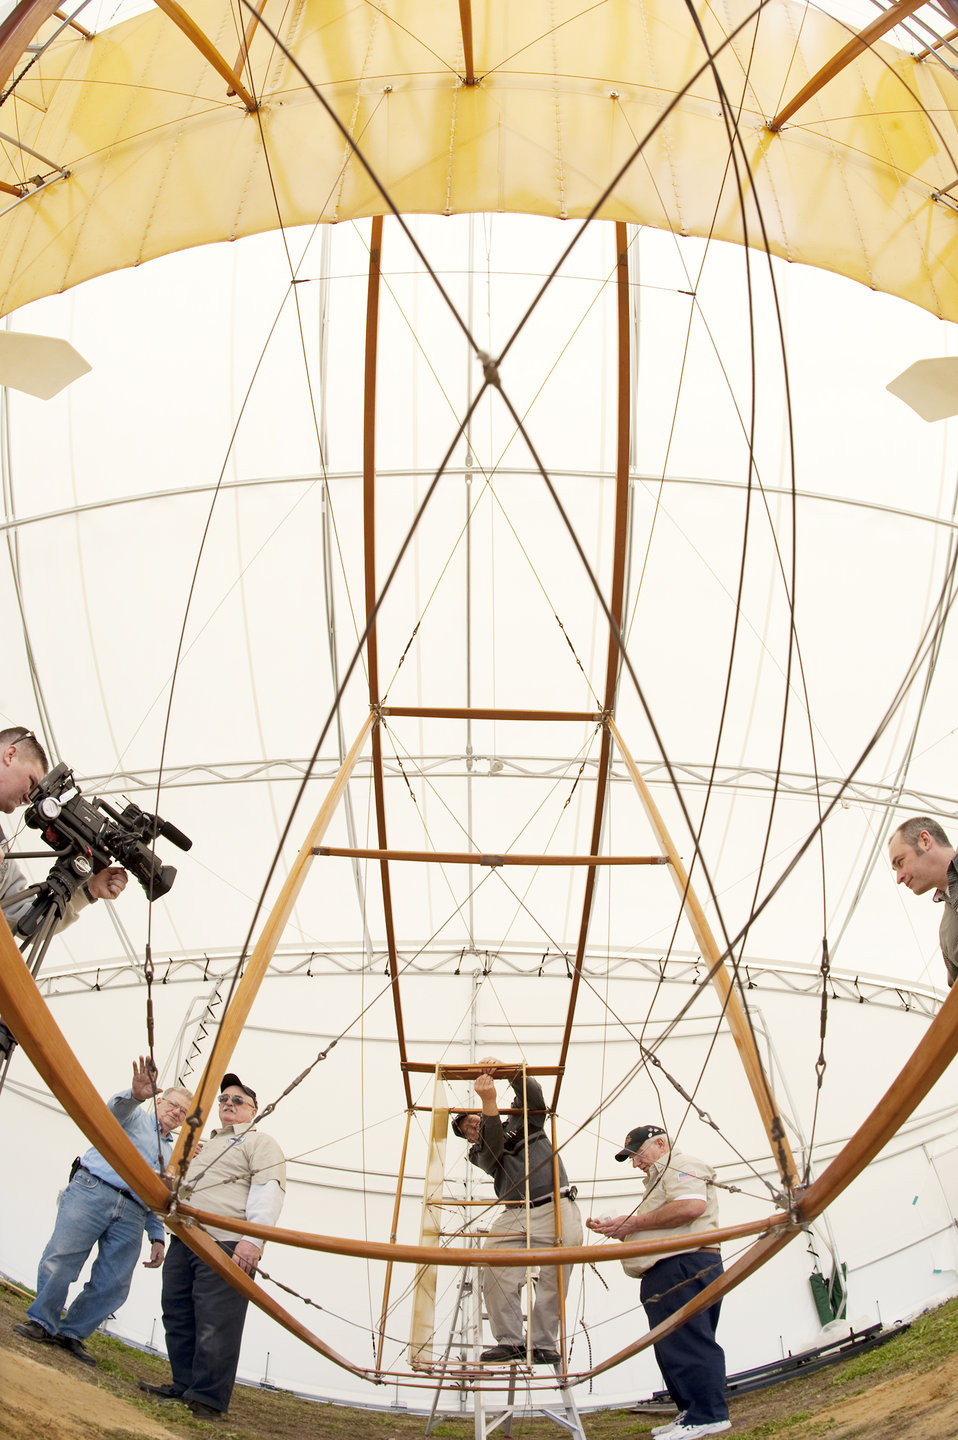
Volunteers from Wright